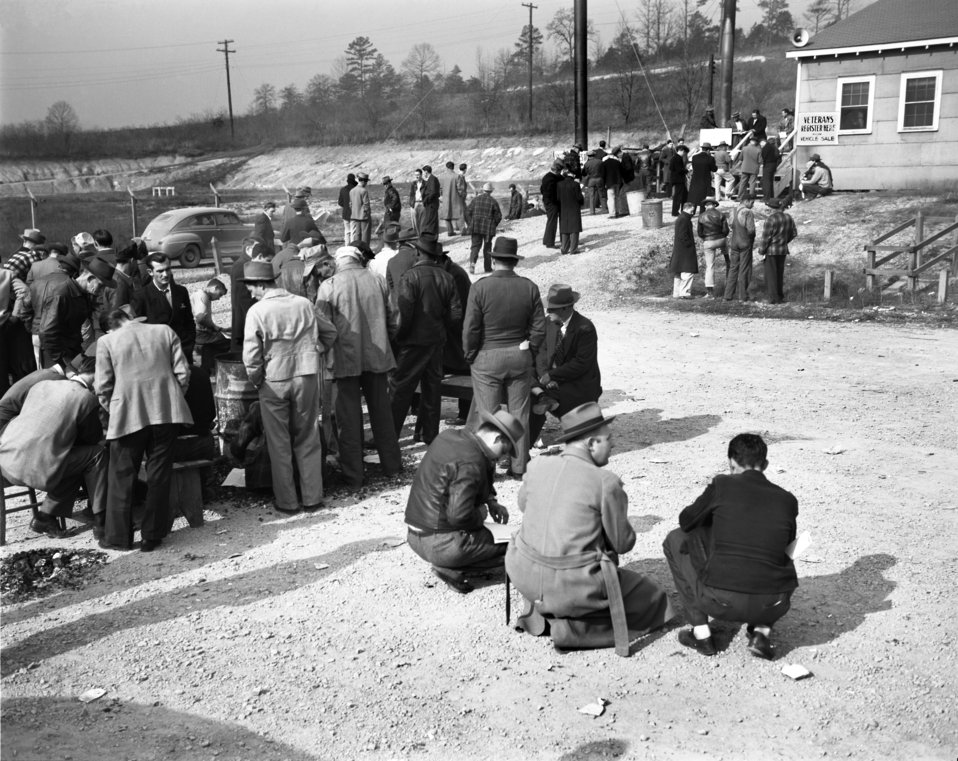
W.A.A. Auto Sale Oak Ridge 1947

3304-5a DOE photo Ed Westcott 2-18-1947 War Assets Administration Exclusive Sale for Vet of WW II Automotive Vehicles at Elza Gate Oak Ridge Tennessee